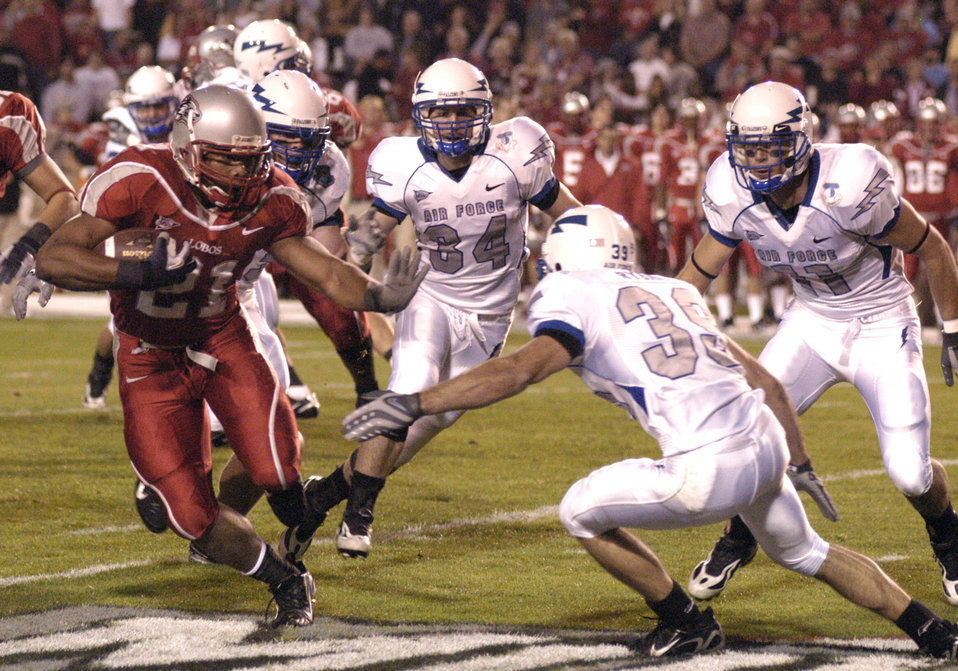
Falcons self destruct in 34-31 loss

New Mexico tailback Rodney Ferguson tries to elude Falcon cornerback Garrett Ryback, 39, during the Lobos 34-31 win over Air Force Oct. 25 at University Stadium in Albuquerque. Ferguson ran a game-high 41 times for 146 yards and two touchdowns.